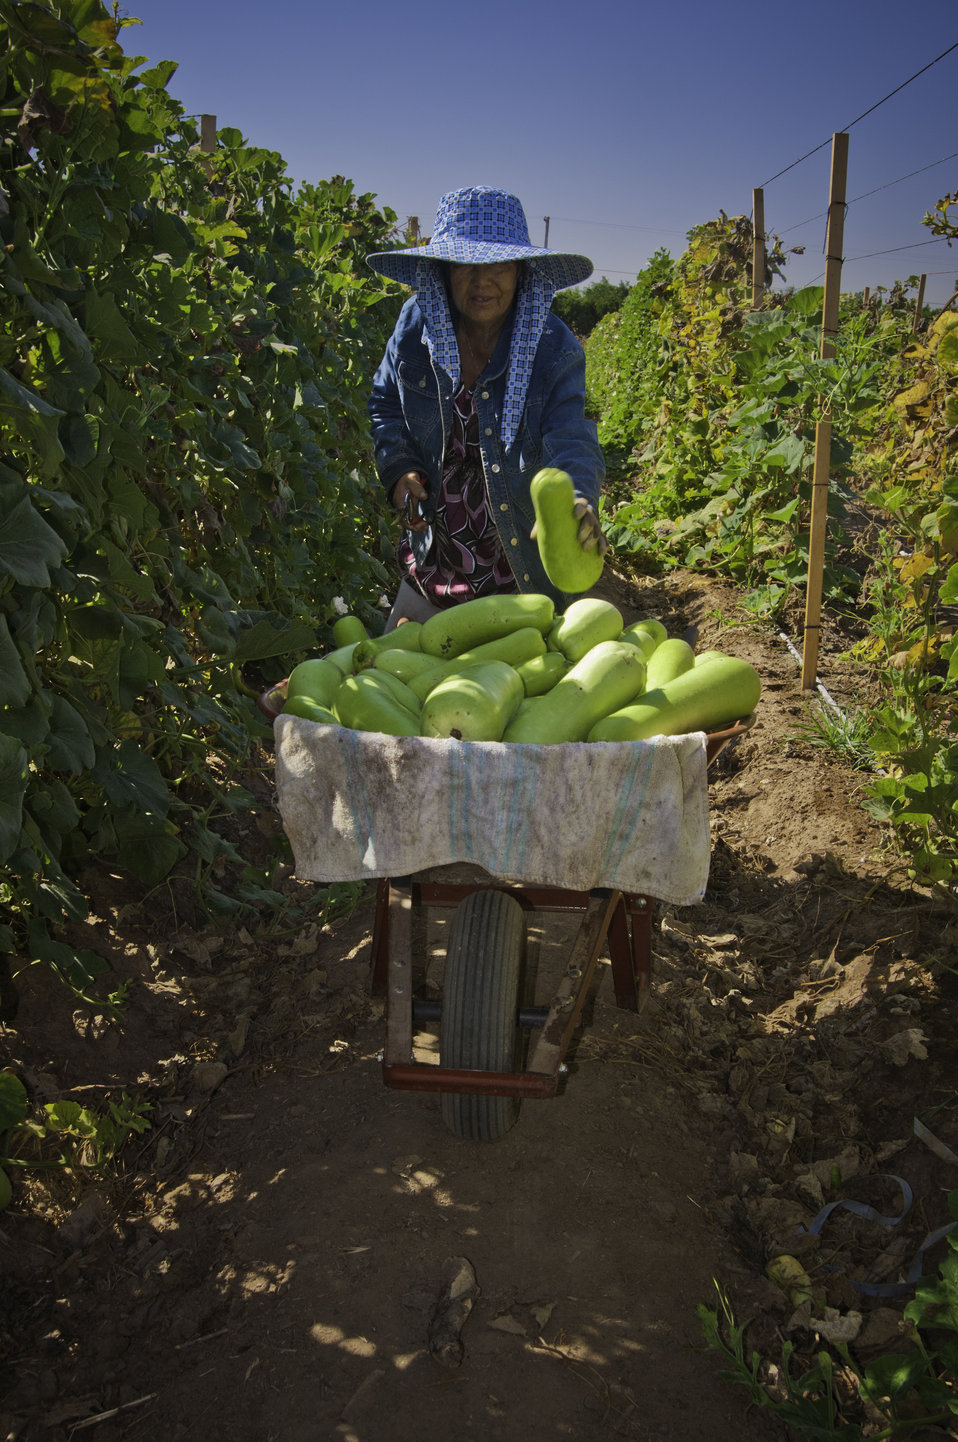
May Young Vu a Hmong farmer taking opo squash harvested in the morning on her farm May's Flower's in Sanger, California to be packed for the farmers market in the afternoon on Thursday, August 29, 2013.